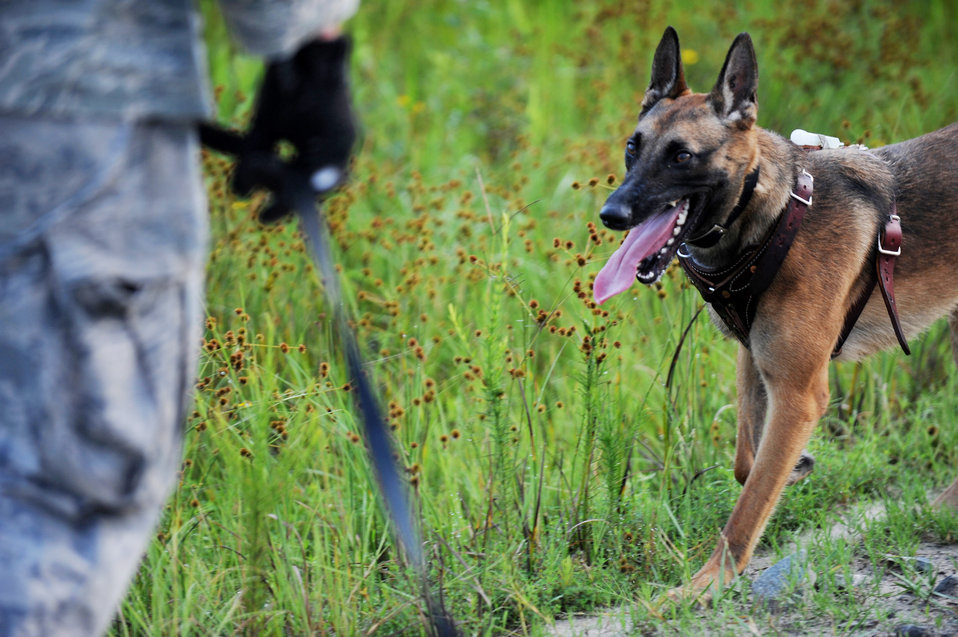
New dog and handler develop bond

Rreyana searches for a chemical odor during a protection training problem July 9 at Moody Air Force Base, Ga. The 820th Security Forces Group received three new dogs in June from Lackland AFB, Texas.